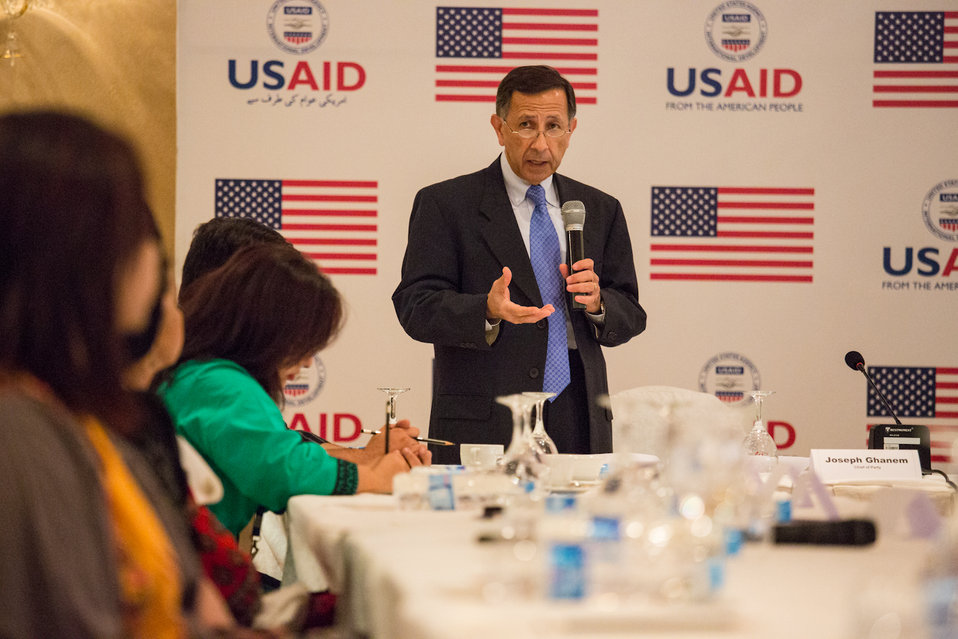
Islamabad, September 6, 2012 - Joseph Ghanem, Chief of Party Training for Pakistan Project talking to attendees.